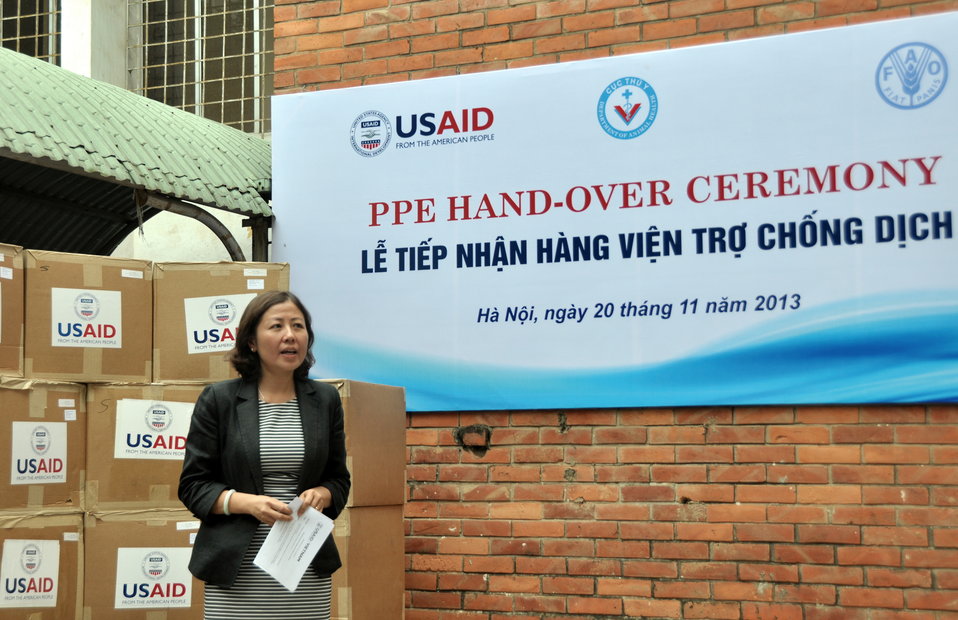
Dr. Nguyen Thu Thuy, Deputy Director General, Department of Animal Health speaks at the personal protective equipment handover ceremony.

Hanoi, November 20, 2013.